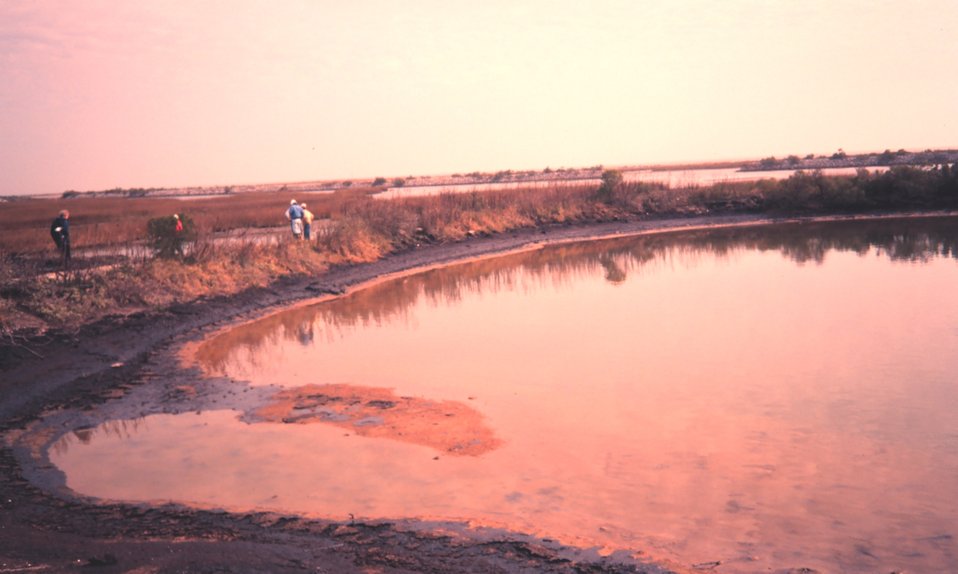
The Greenhill/East Timbalier above ground waste pit associated with petroleum facility.